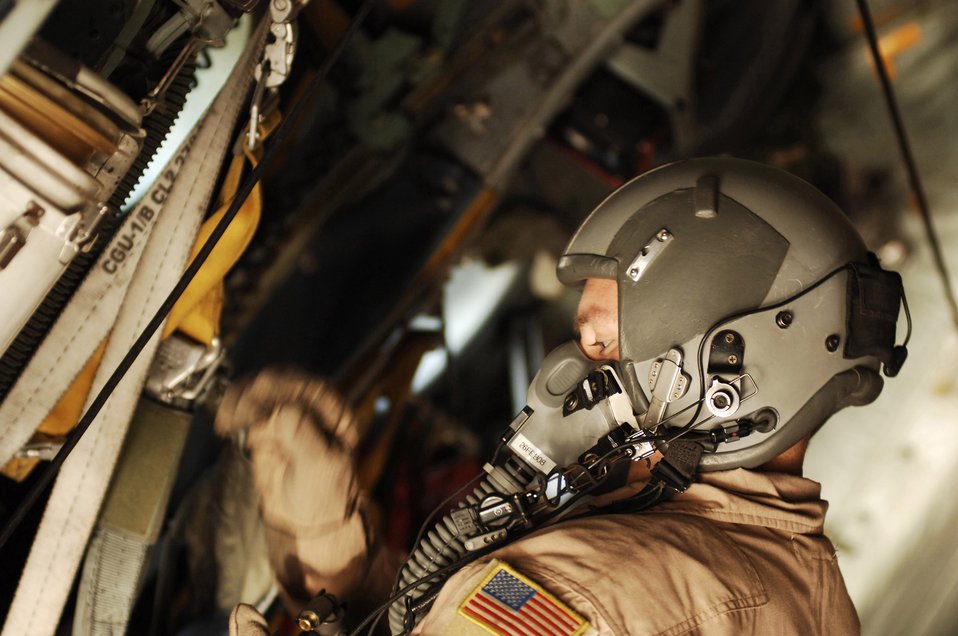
Airmen take Soldiers to the battlefield

Senior Airman Kenny Harmon does a pre-flight oxygen mask inspection aboard a C-130 Hercules Feb. 4 at a Southwest Asia air base. Airman Harmon is deployed in support of operations Enduring Freedom and Iraqi Freedom and a part of his duties as loadmaster is to ensure the safety of members on board the aircraft while being transported throughout the area of responsibility. He is a C-130 loadmaster deployed with the 737th Expeditionary Airlift Squadron.